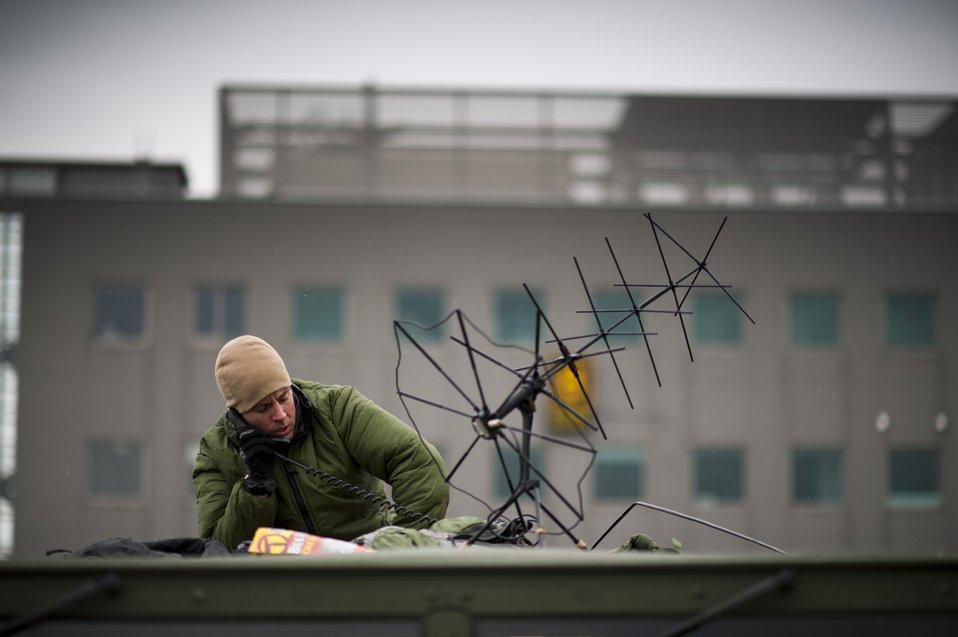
Making contact

An Airman sets up a satellite link for communications March 16, 2011, at Sendai Airport, Japan, in support of Operation Tomodachi.